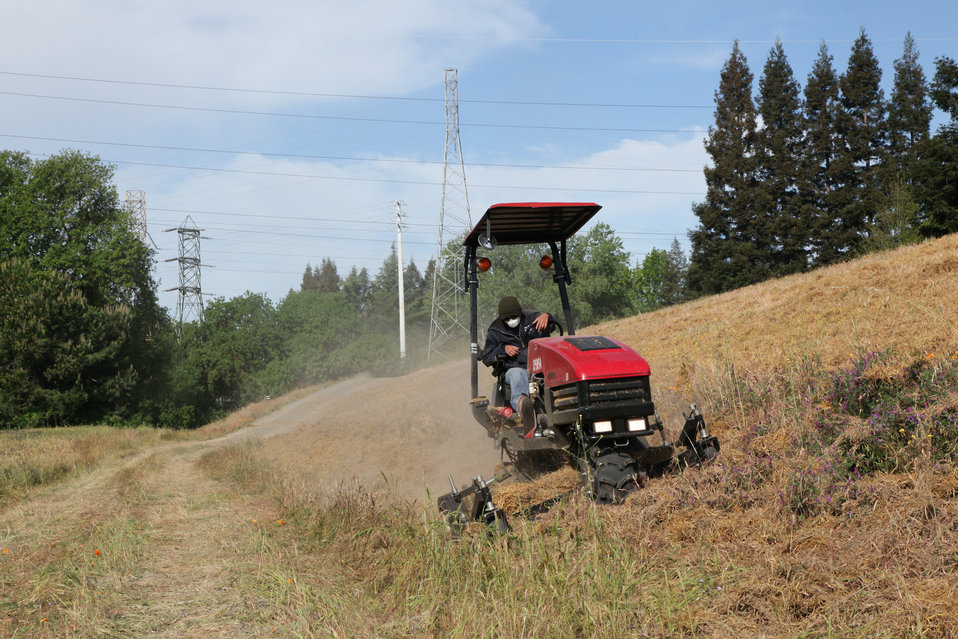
American River Flood Control District mower

A worker for the American River Flood Control District is finally able to begin mowing April 19, 2013 along the American River in Sacramento, Calif., now that rolls of straw are being removed. The straw wattles, as they're called, were put in place to help native grasses grow on the newly refurbished levee during winter rains. Their removal is one of the final steps in restoring this reach to its pre-construction condition. More than 4,000 feet of this levee was reinforced and raised an average of one foot to safely pass more water coming from Folsom Dam and its auxiliary spillway, currently under construction and slated for completion in October 2017.